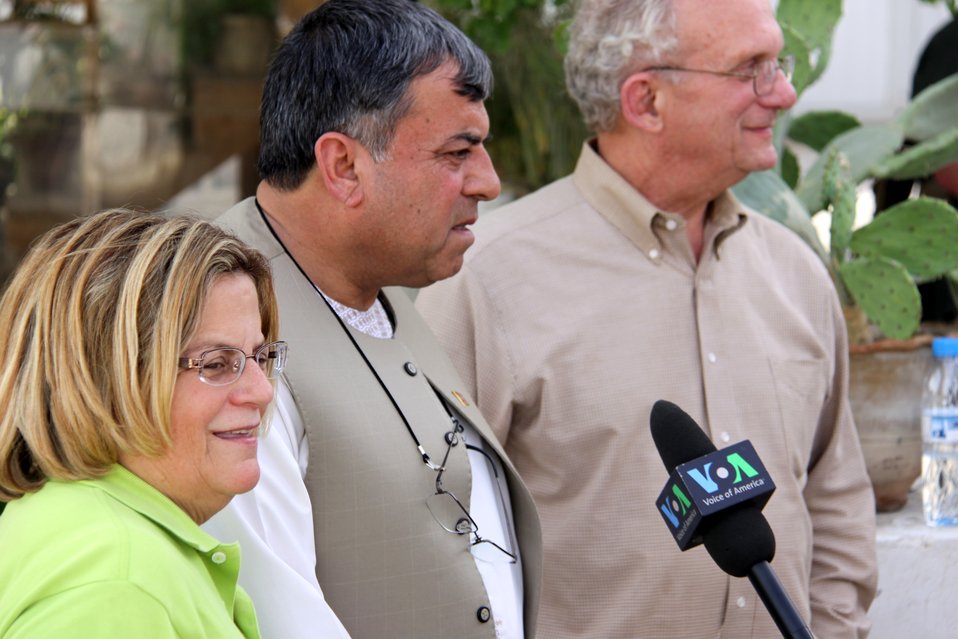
Meeting with Local Leaders in Kandahar